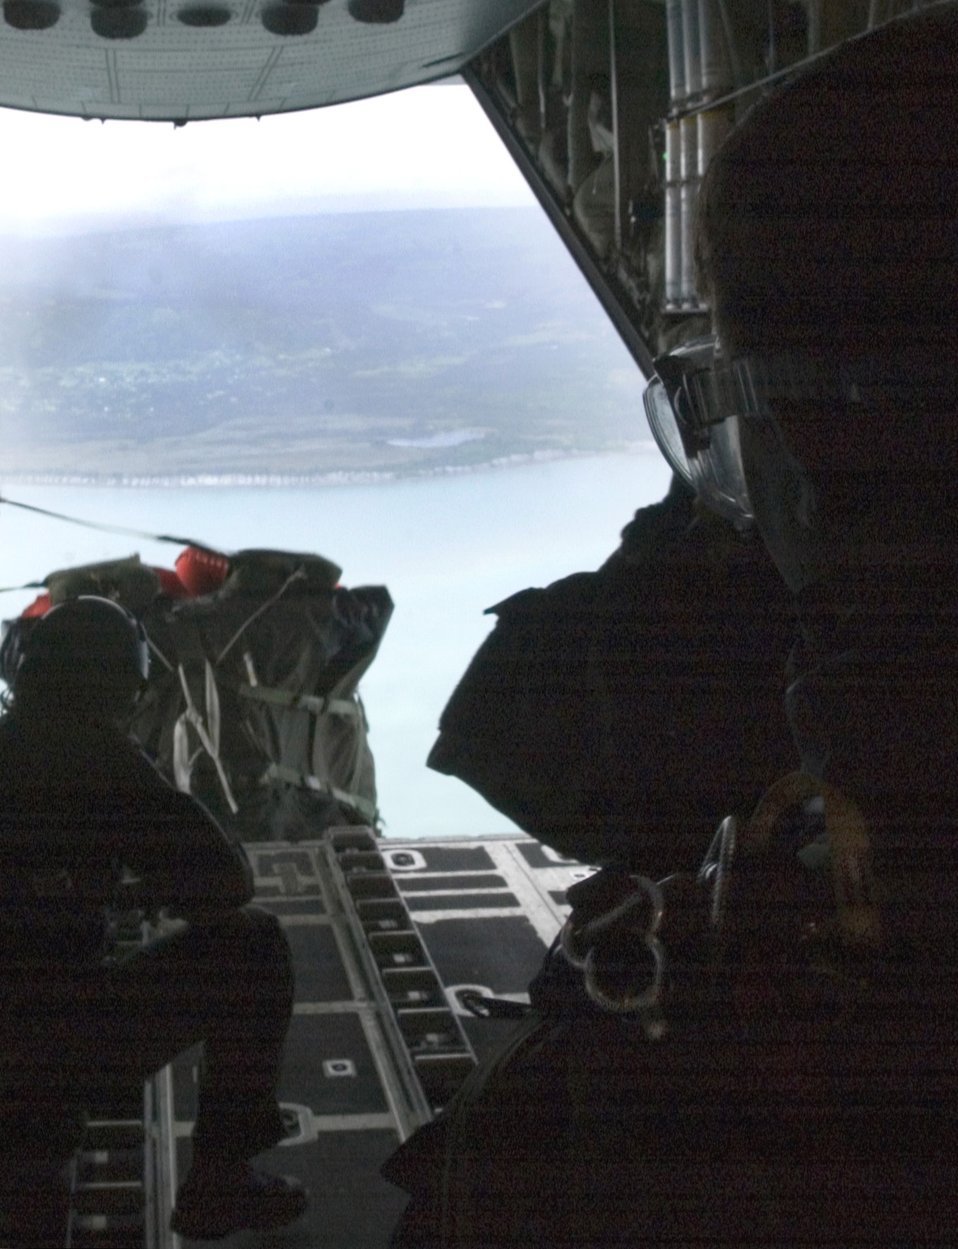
Pararescuemen chance the extremes

Loadmasters drop a Zodiac inflatable raft into Kachemak Bay from a HC-130 Hercules for three pararescuemen simulating downed pilots awaiting rescue in the water. Air Force pararescue jumpers assigned to bases in Japan and Alaska practiced an over-water rescue training scenario as part of Exercise Northern Edge 2006.